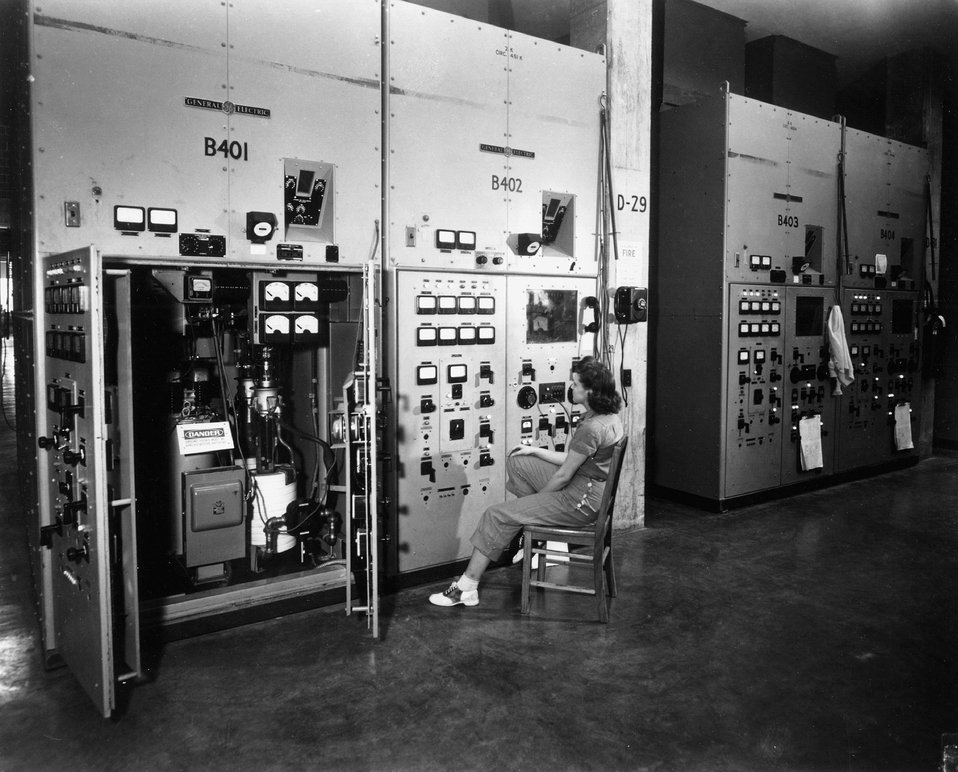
Y-12 worker at Beta-3 control panel management cautioned male co-workers not to talk to female Y-12 workers as they monitored the control panels. c. 1945